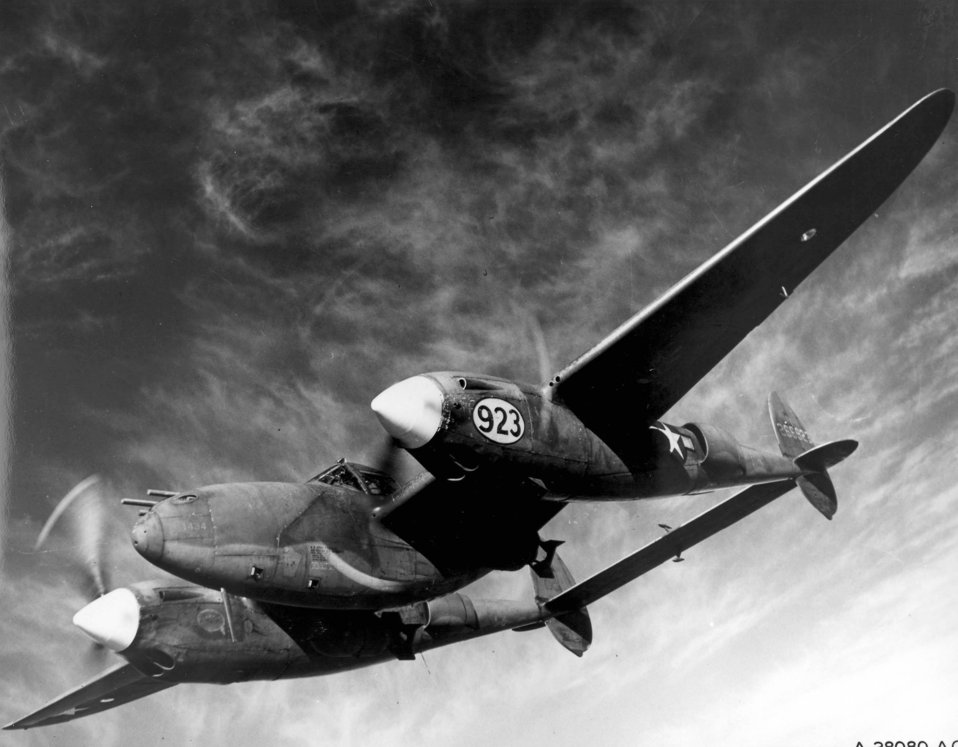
Lockheed P-38 Lightning

1940's -- Orlando, Fla. - Barely visible beneath the wings of a Lockhead P-38 Lightning are the deadly bombs with which this multi-purpose plane can blast enemy troops, ships and gun emplacements. As shown in recent demonstrations at the AAF Tactical Center, Orlando, Fla., the Lockhead P-38, now being used as a fighter-bomber, is capable of carrying bomb pay loads up to 2,000 pounds, thus affording the Allies another potent weapon for use against Germany and Japan in coming offensive.